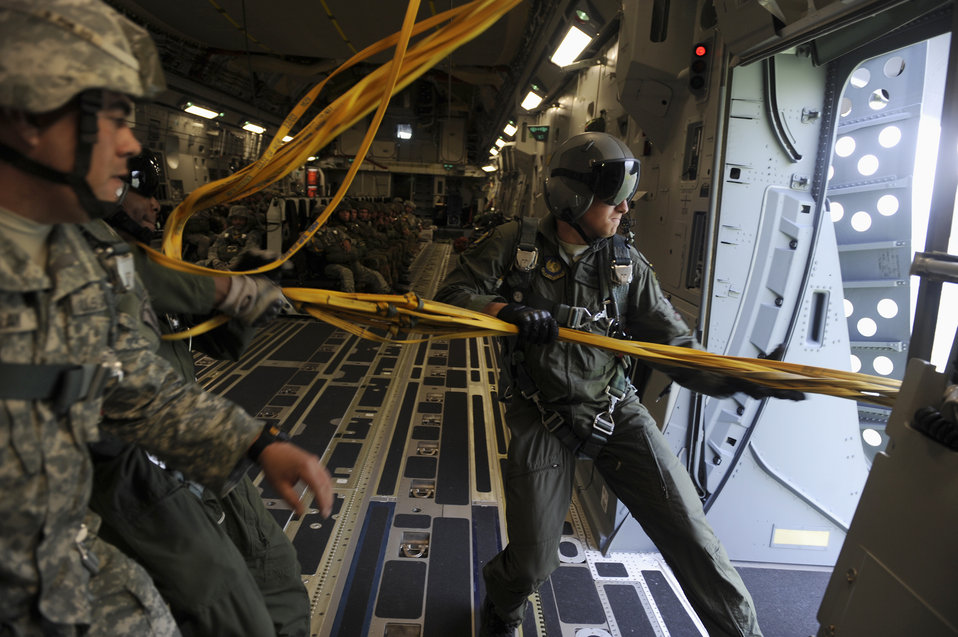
Heave, ho!

Loadmasters pull parachute rigging into a C-17 Globemaster III June 16, 2010, over southwestern Germany. U.S. servicemembers along with soldiers from Belgium, Germany, Hungary, Britain, Norway and the Netherlands participated in airborne operations during International Jump Week 2010. The 435th Contingency Response Group organized the event.